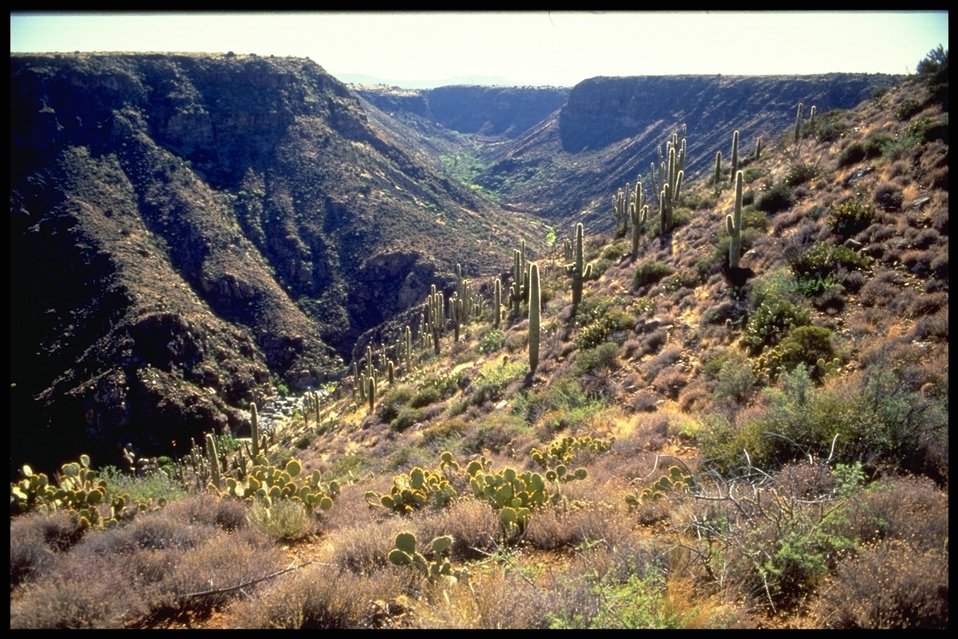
Tall Saguaro Cacti grow in a canyon in the Agua Fria National Monument.